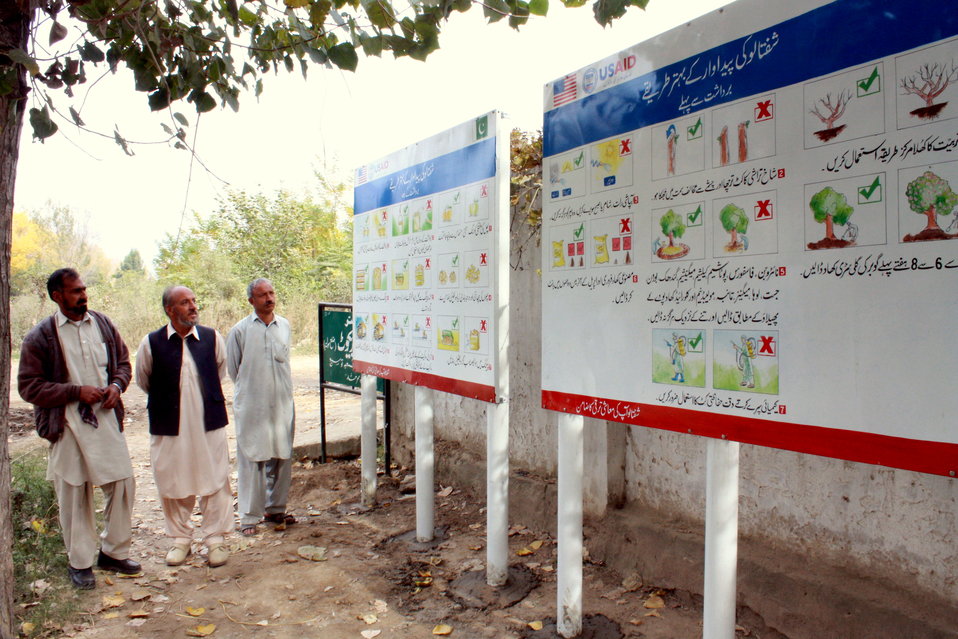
The USAID Firms Project Peach Hoardings on Best Agricultural Practices in the Peach Sector

These instructional hoardings/billboards encourage the farmers to adopt pre and post harvest best practices in peach farming.